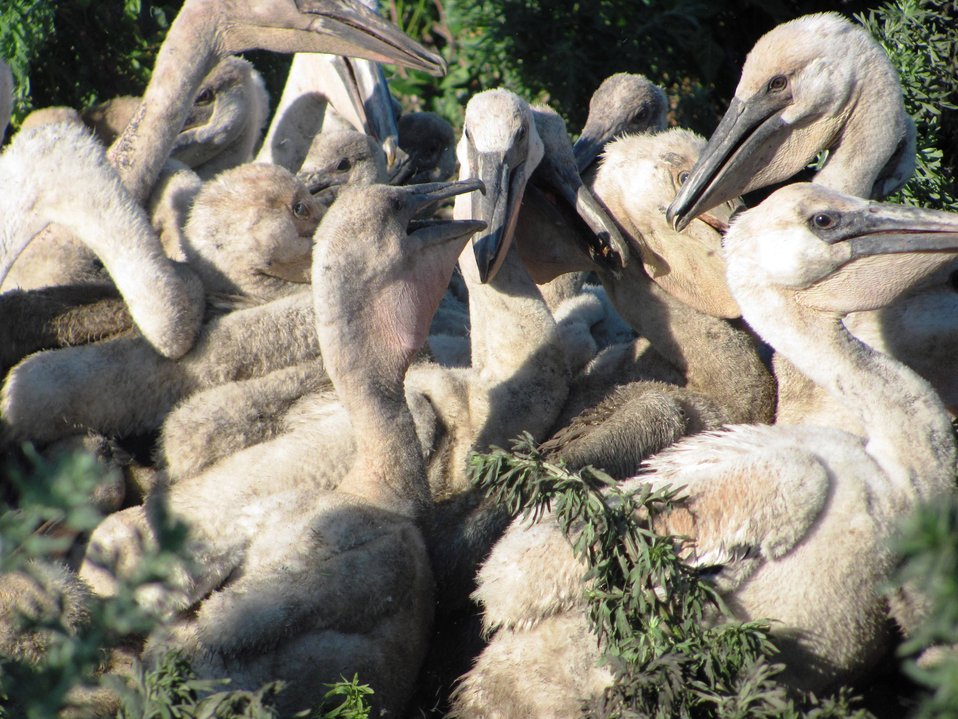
Creche

Juvenile pelicans form groups called crèches. This crèche offers the young pelicans protection from high winds. It also helps the young with thermal regulation.